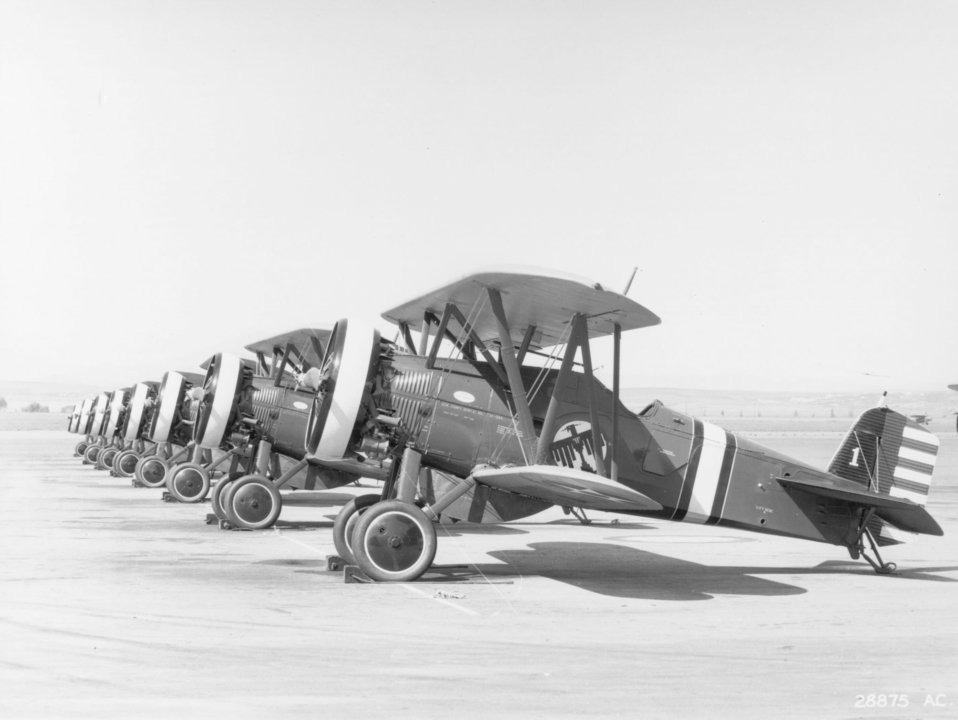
P-12

EARLY YEARS-- The Army Air Corps received, between 1929 and 1932, a total of 366 P-12s.